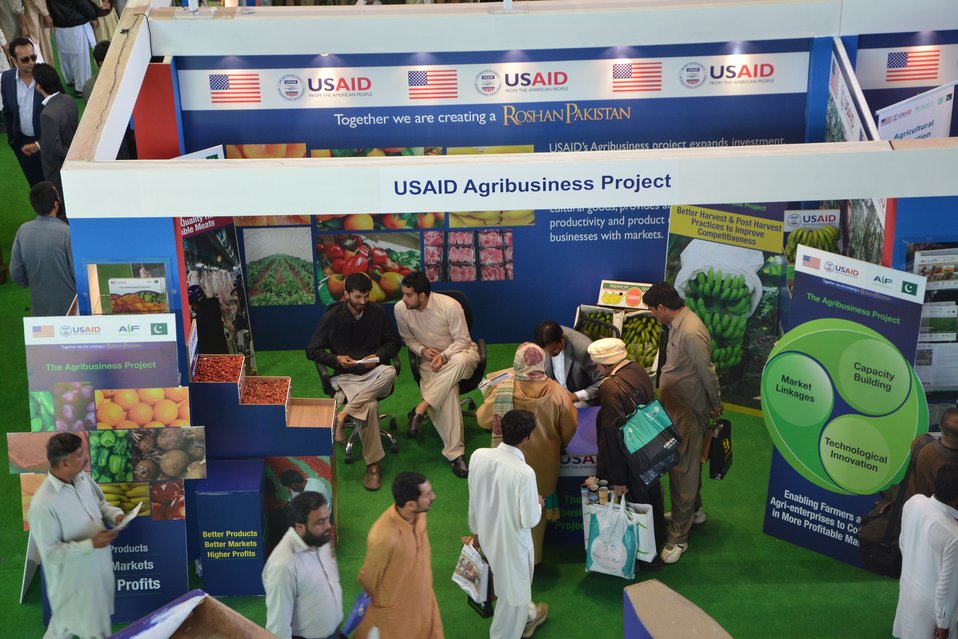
TAP9